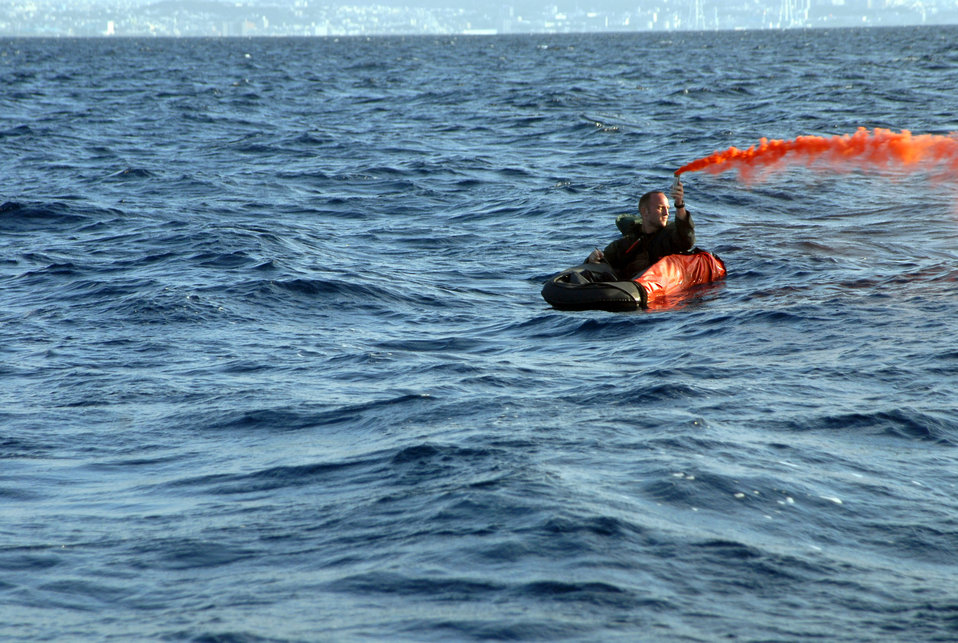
Trouble afloat

Capt. Derek Flynn pops smoke in order to attract rescue efforts Oct. 24 in the waters off the coast of Okinawa. Captain Flynn of the 67th Fighter Squadron was placed in the water as part of a survival, evasion, resistance and escape exercise at Kadena Air Base, Japan.